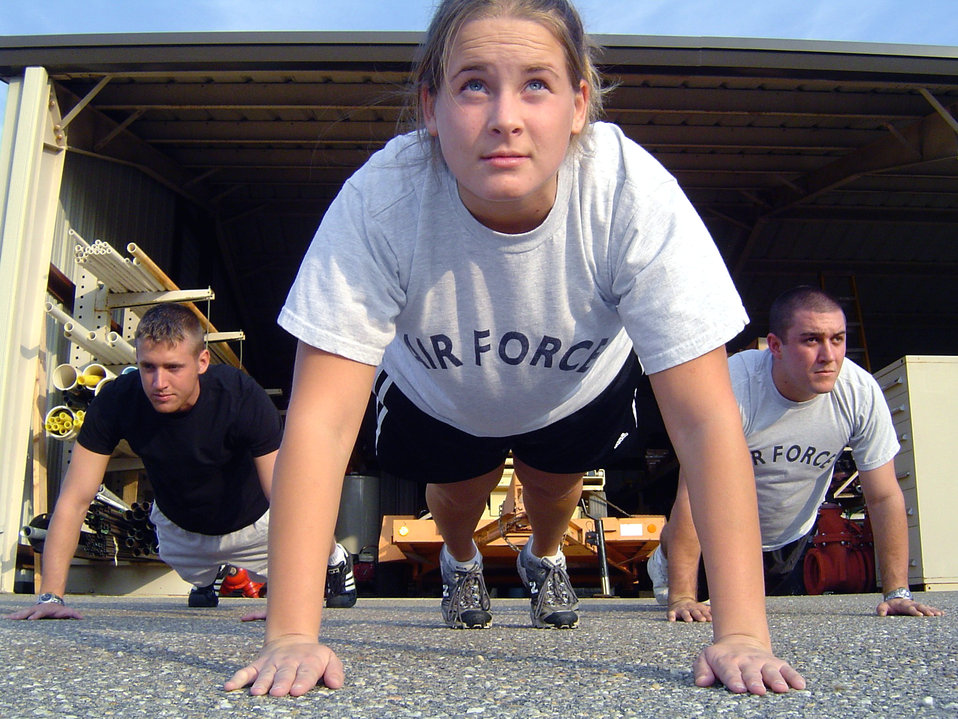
Preparing for push-ups

POPE AIR FORCE BASE, N.C. -- Airman Rachel Nicole Murphy and other airmen of the 43rd Civil Engineer Squadron here do push-ups at the squadron compound as part of the morning resistance training. Air Force officials released the fitness-scoring charts Oct. 17 that will be used beginning Jan. 1.